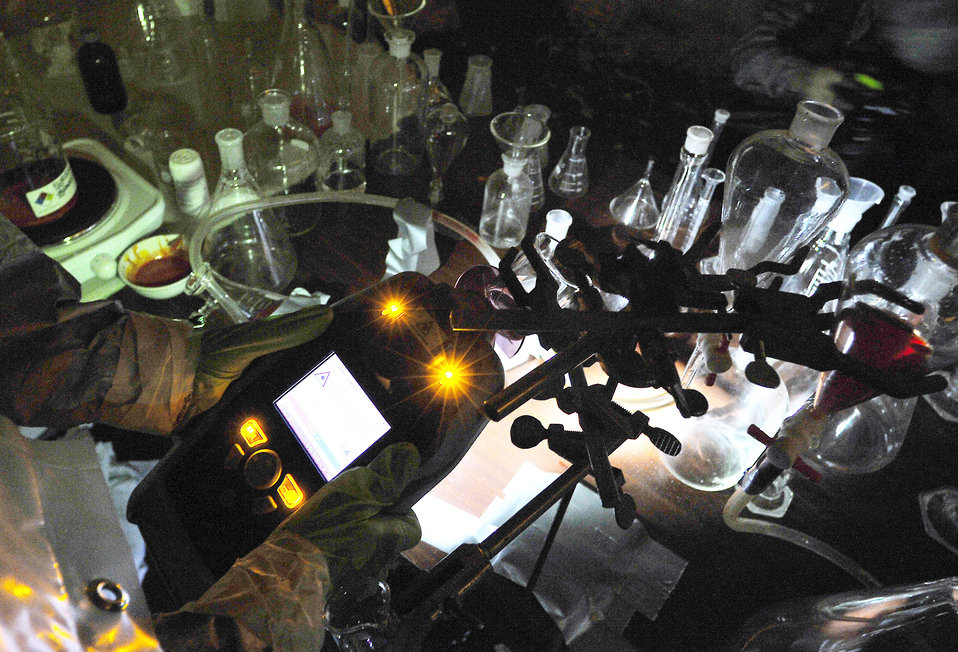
All clear!

Staff Sgt. Joshua McDowell tests chemicals in a simulated emergency environment June 23 during the U.S. Air Forces in Europe 2009 Chemical, Biological, Radiological and Nuclear Challenge at Ramstein Air Base, Germany. Sergeant McDowell is a 52nd Civil Engineer Squadron emergency manager.